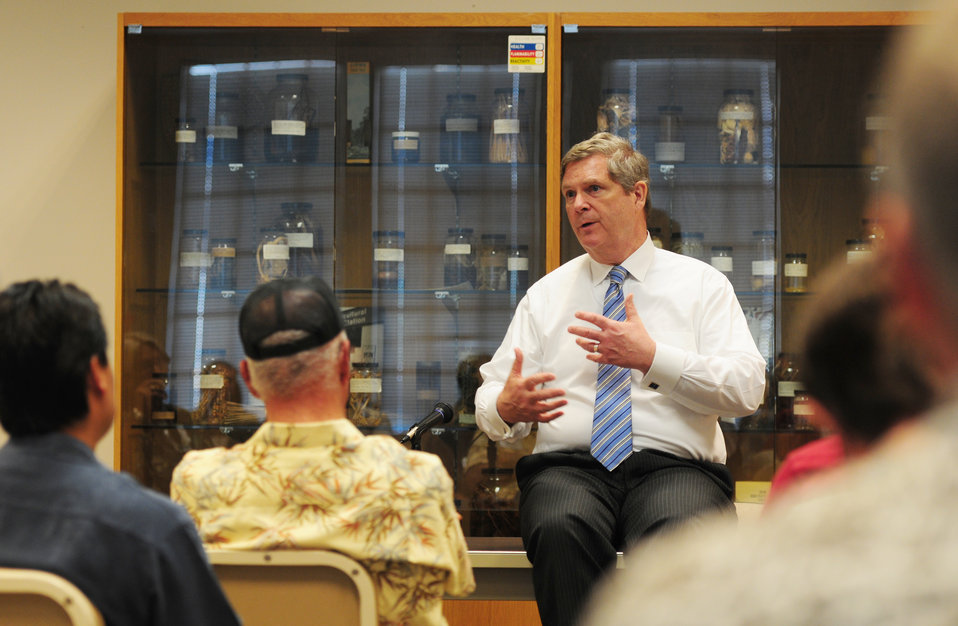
Agriculture Secretary Tom Vilsack speaks at a stakeholder meeting held at the State of Hawaii, Department of Agriculture Plant Quarantine Building in Honolulu, Hawaii, on Tuesday, January 10, 2012, to discuss USDA programs, agricultural challenges in Hawaii, and alternative energy.